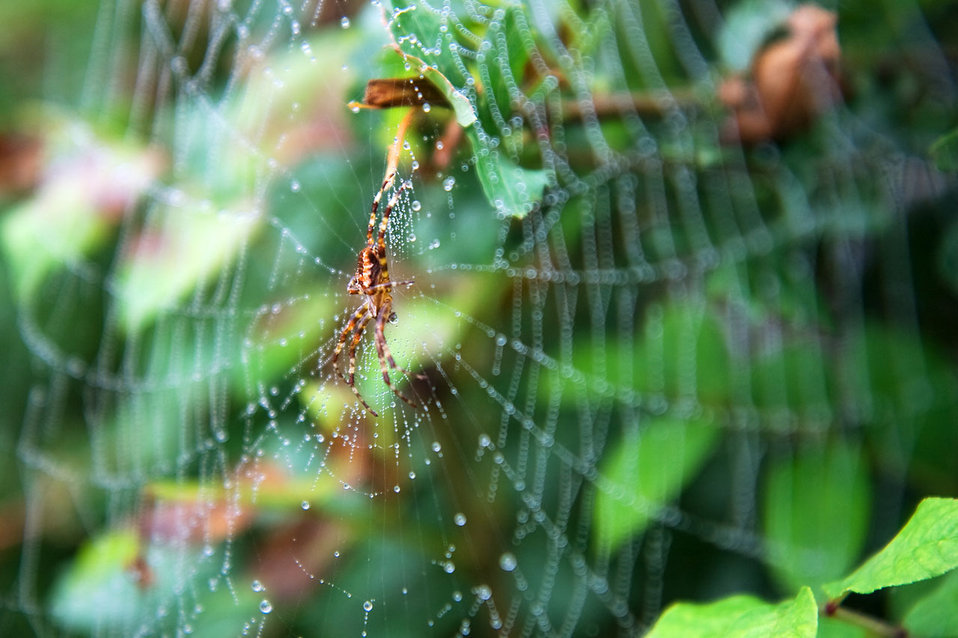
Spider on the net.